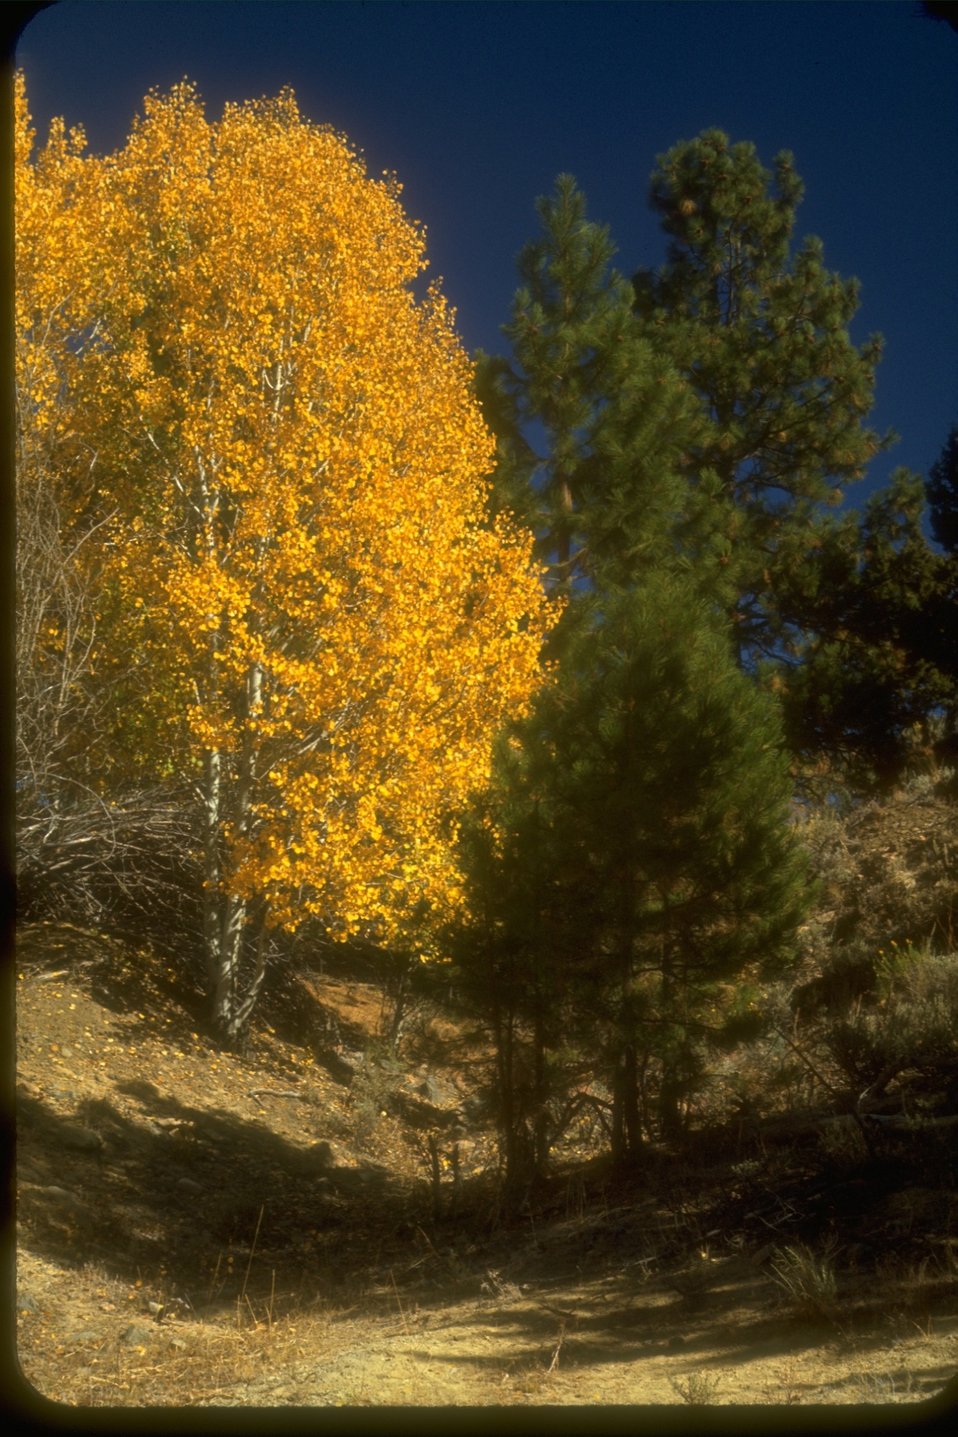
Fall foliage on the Aspen in the Mormon Basin.